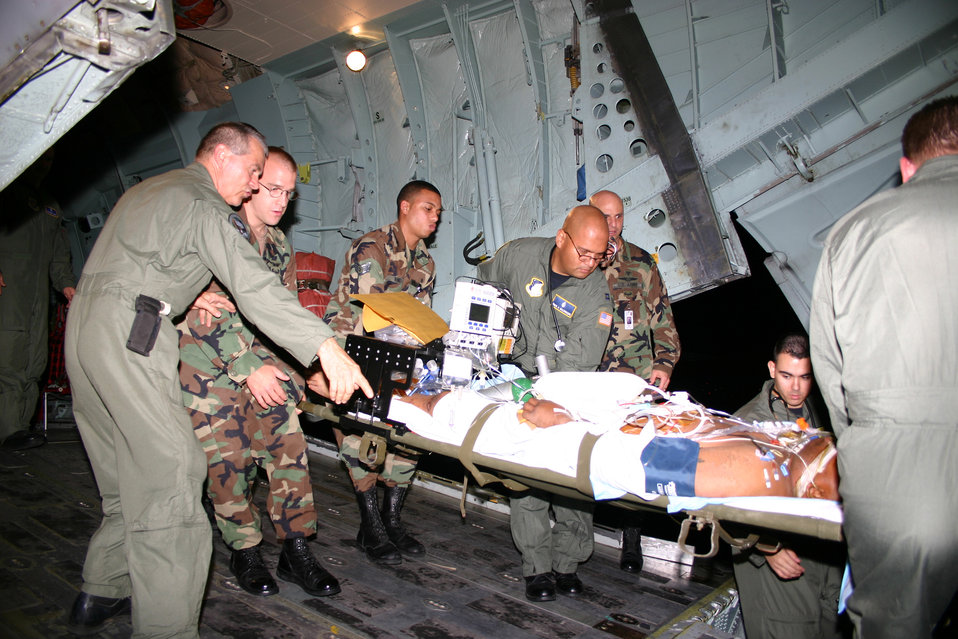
Transporting critically ill

SAN ANTONIO -- Capt. Edwin Maldonado (center) helps move a critically ill Soldier from a C-141 Starlifter into an ambulance at San Antonio International Airport on April 29. Captain Maldonado was part of the critical care air transport team of medics from Wilford Hall and Brooke Army medical centers that ensured 14 servicemembers injured in Iraq were moved safely to BAMC. Captain Maldonado is a critical-care nurse with Wilford Hall's 759th Surgical Operations Squadron at Lackland Air Force Base, Texas.